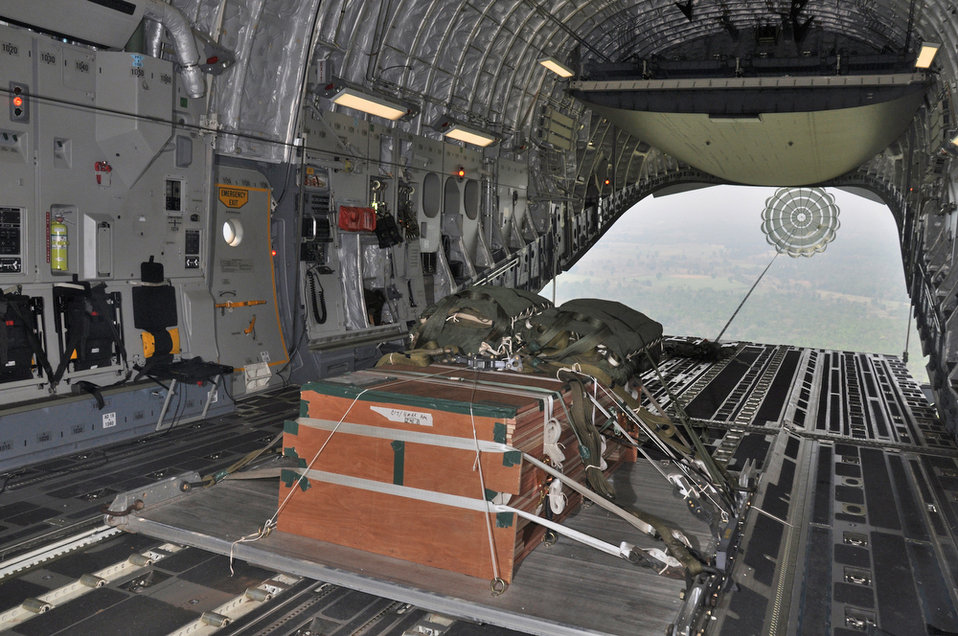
Multi-aircraft mission provides key training in Thailand

Simulated cargo is ready to be ejected from the back of a C-17 Globemaster III during an airdrop training mission supporting Cope Tiger 2010 March 8, 2010, in Thailand. This year's exercise takes place primarily at Udon Thani and Korat Royal Thai Air Force Bases March 1 to 12. The C-17 is from Joint Base Pearl Harbor-Hickam, Hawaii.